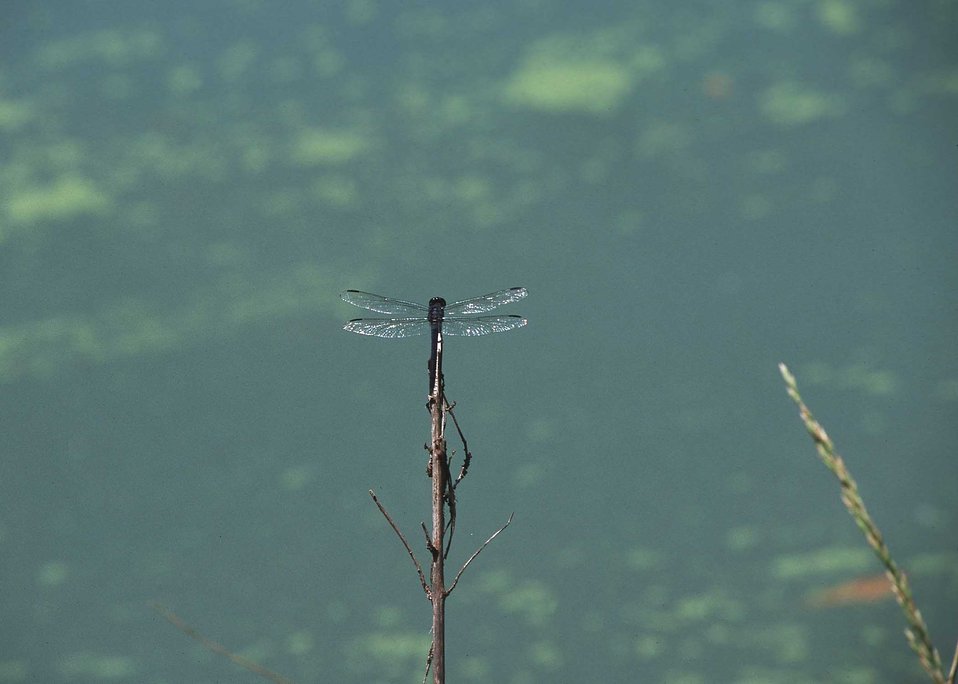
Ponds provide excellent habitat for a variety of wildlife species.